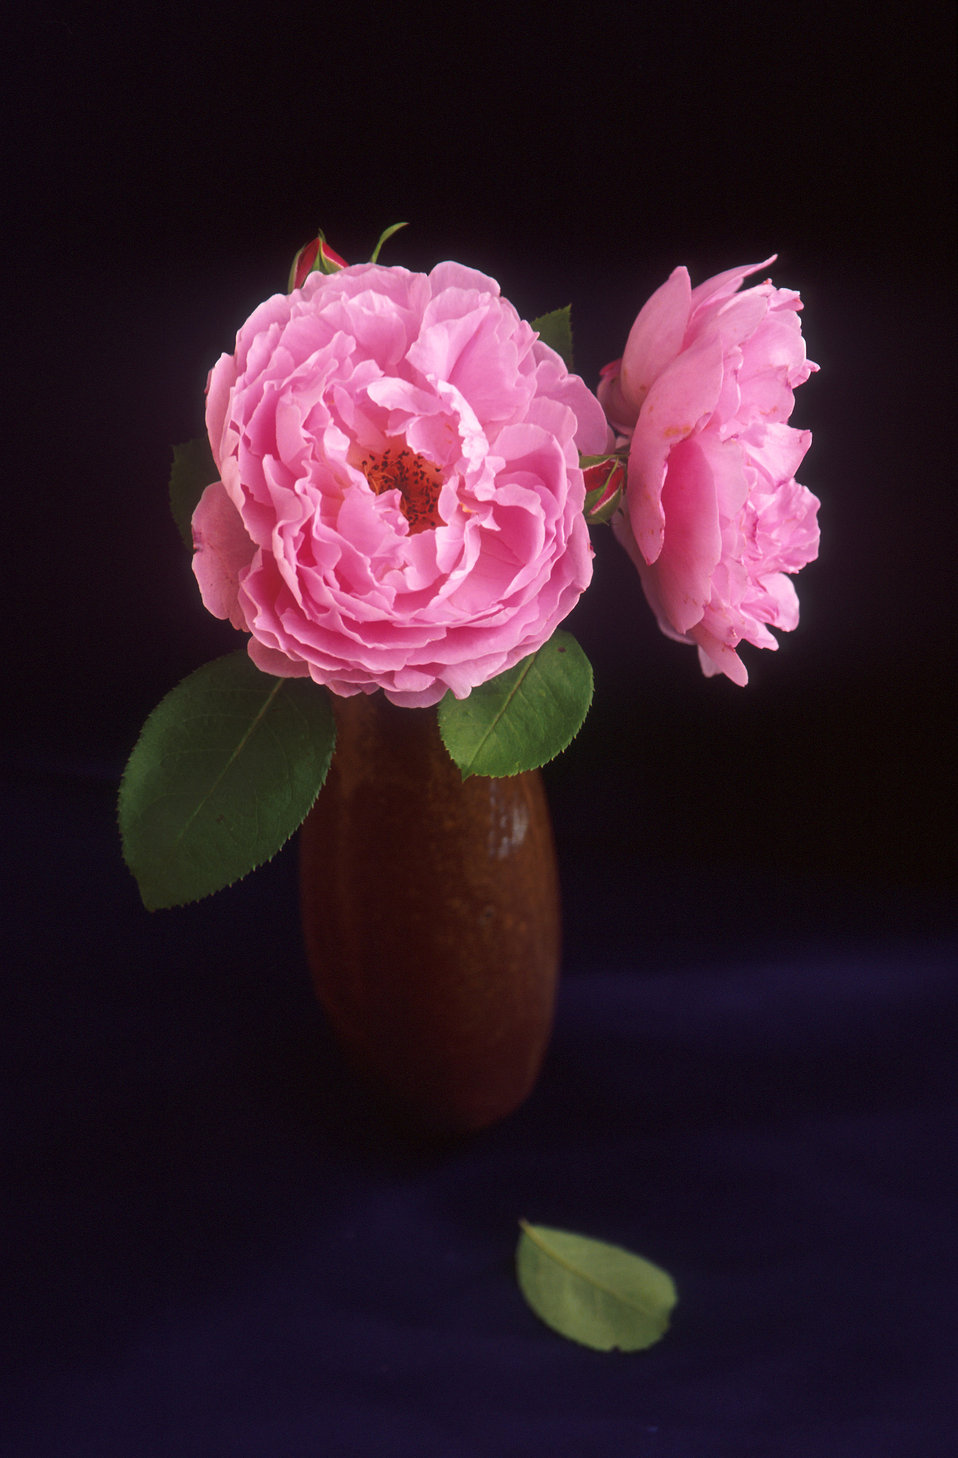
The Sarah van Fleet rose, developed by geneticist Walter van Fleet specifically for American gardens.